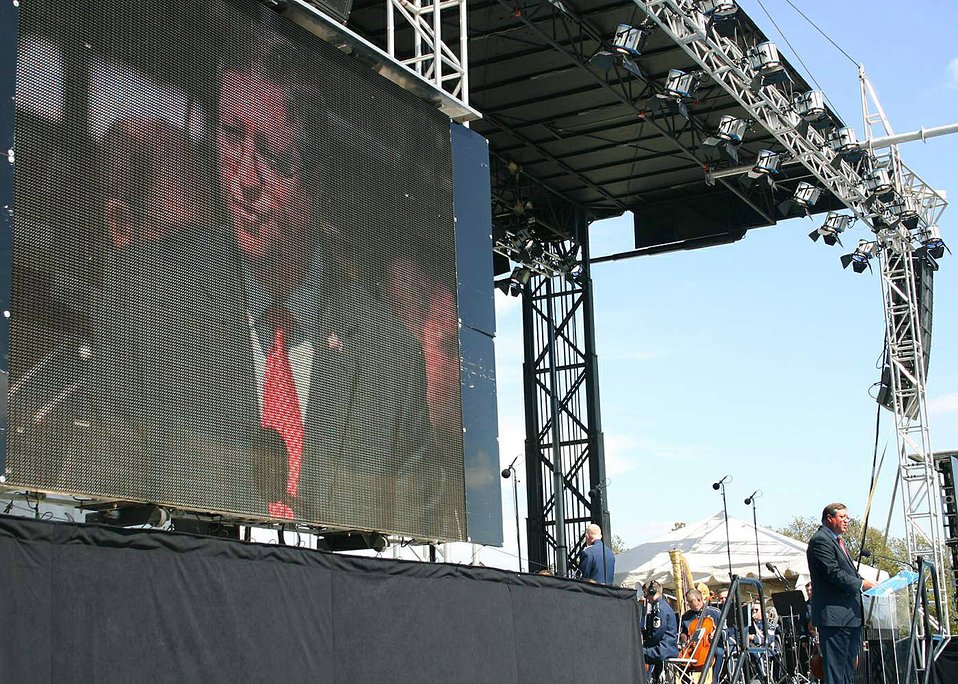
Airmen honor America's fallen

Acting Secretary of the Air Force Michael B. Donley speaks at the National Tribute to Honor America's Fallen and Their Families Sept. 20 in Washington, D.C.